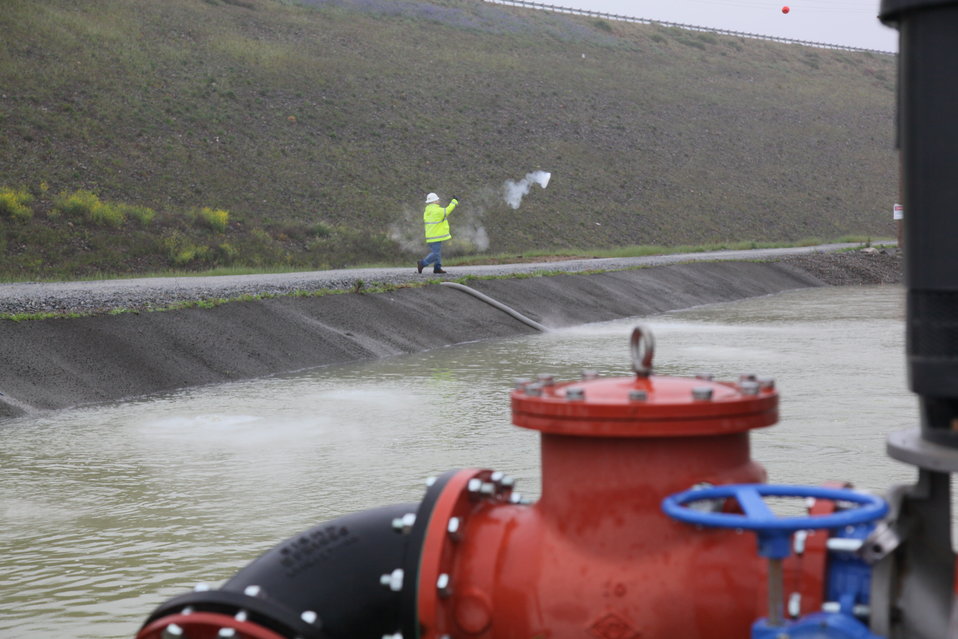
Runoff water treatment at the Folsom Dam auxiliary spillway

A contractor for the U.S. Army Corps of Engineers Sacramento District adds dry ice to reduce pH levels in ponds of runoff water at the excavation site for the Folsom Dam auxiliary spillway Folsom, Calif., March 15, 2012. Runoff that enters the excavation site is treated, monitored and filtered before being pumped into Folsom Lake. The spillway, scheduled to be ready for use in 2017, will allow Folsom Dam to release water sooner and more safely. The project is part of the Folsom Dam Joint Federal Project, a joint effort of the Sacramento District, the U.S. Bureau of Reclamation, the Central Valley Flood Protection Board and the Sacramento Area Flood Control Agency to improve the safety of the dam and reduce flood risk for the greater Sacramento area.